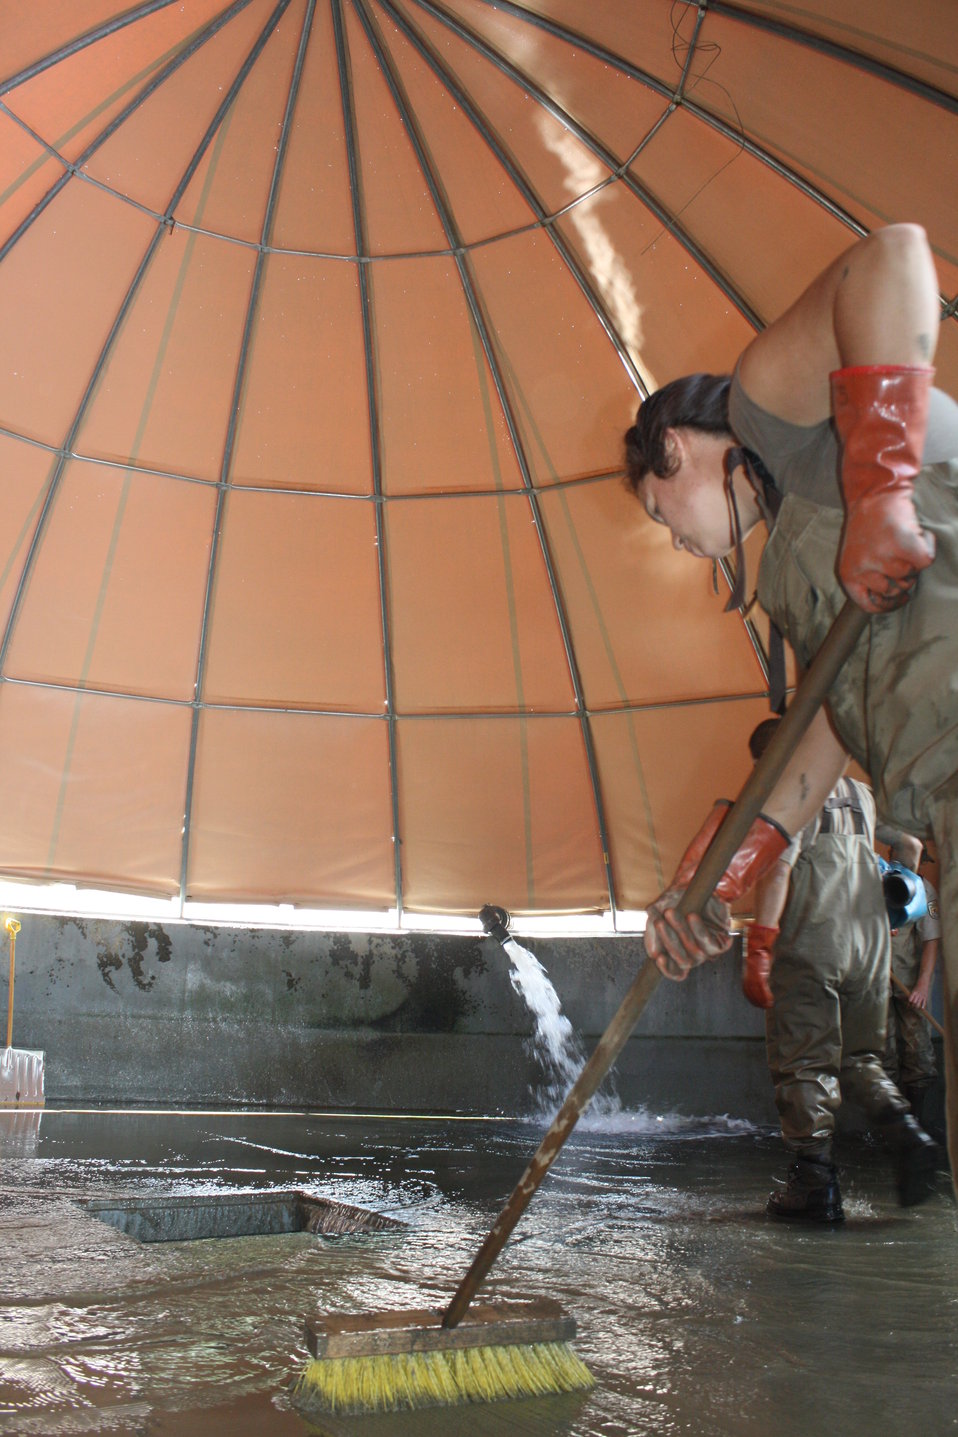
Cleaning river sediment deposited by Hurricane Irene flood waters

USFWS staff cleaning river sediment from interior of circular fish rearing pool. River water and sediment from the Hurricane Irene flood event breached some of the circular fish rearing pools. Some fish escaped and were left stranded by receding flood waters.